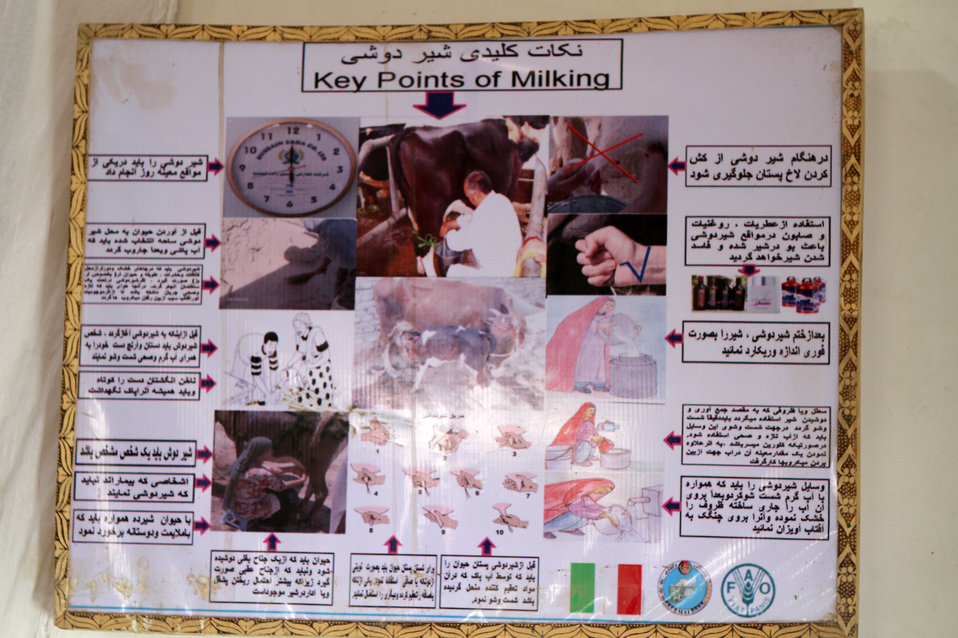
USAID funded Milk Processing Center